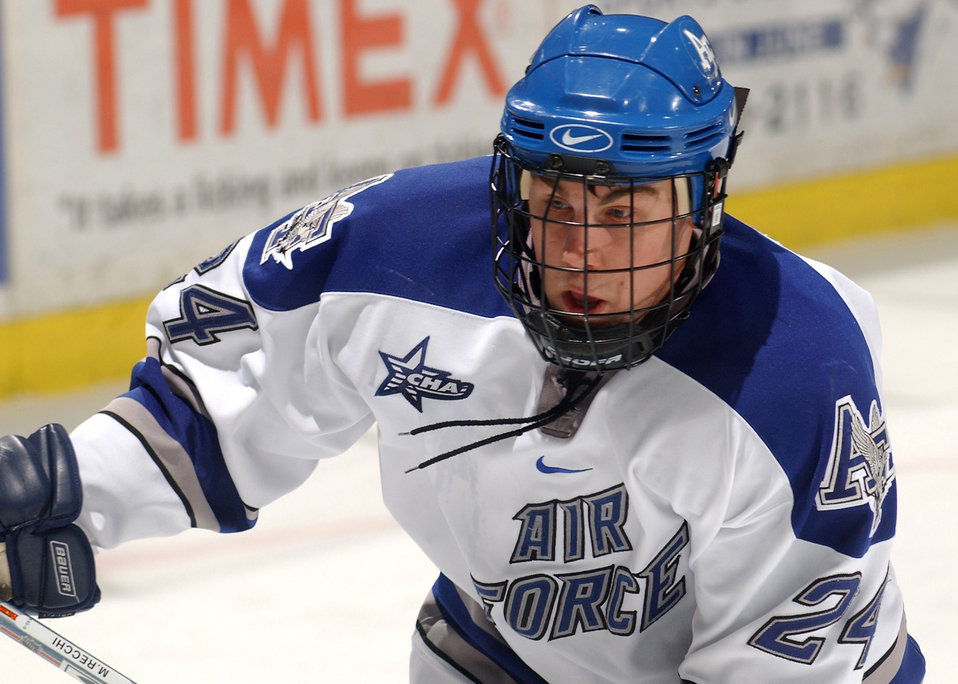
Power player

Air Force junior center Eric Ehn is the Atlantic Hockey Association offensive player of the week.